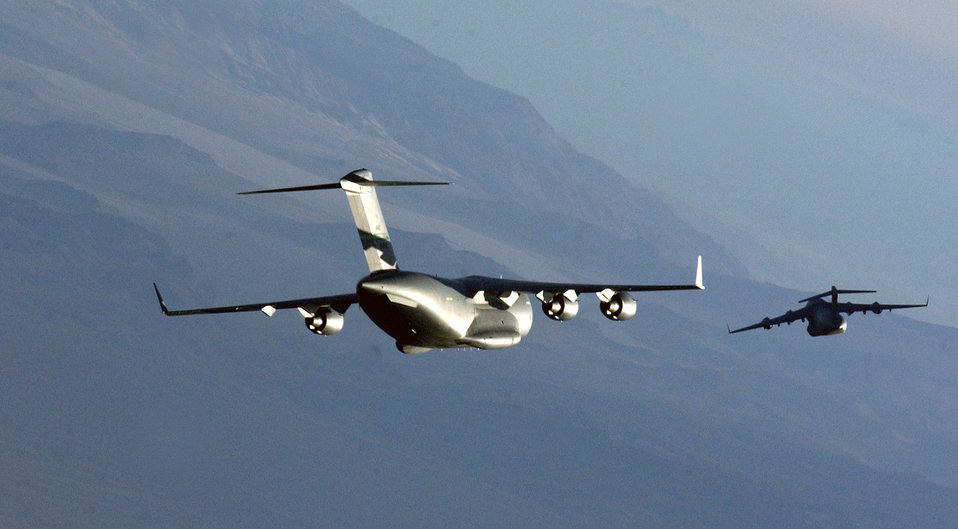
C-17 debut

NELLIS AIR FORCE BASE, Nev. -- Two C-17 Globemaster III aircrews prepare for a simulated air drop Dec. 10 during a two-week mission-employment exercise here. The exercise brought students from the Air Force, Navy and German air force together to learn how their aircraft can integrate during realistic combat scenarios. This is the first year a C-17 has been included in the exercise.